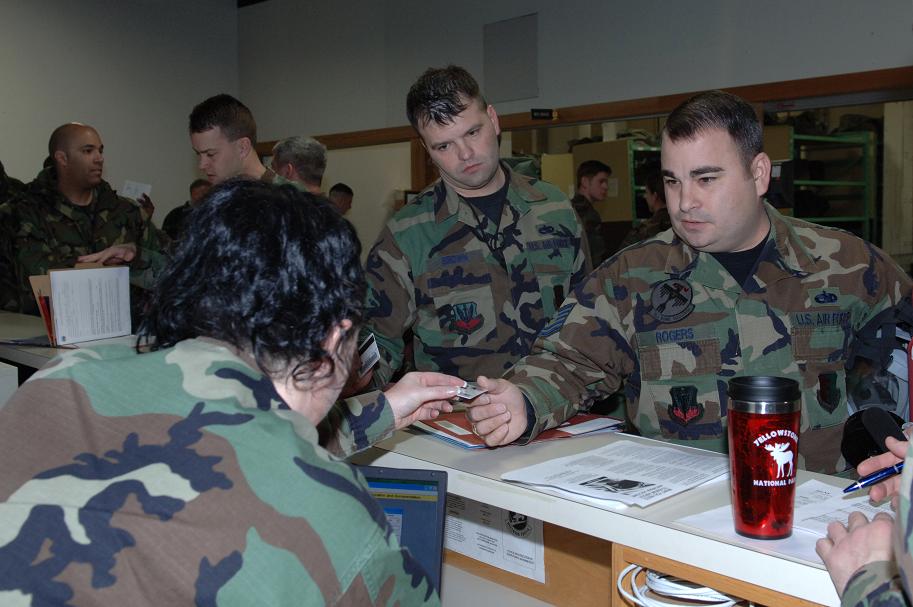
deployment to Southwest Asia from Ellsworth

Members of the 28th Bomb Wing, participate in a personnel deployment function (PDF) line prior to their upcoming deployment to Southwest Asia from Ellsworth Air Force Base, South Dakota, January 24, 2007. The 28th Bomb Wing is deploying troops to Southwest Asia in support of operations Iraqi Freedom and Enduring Freedom.